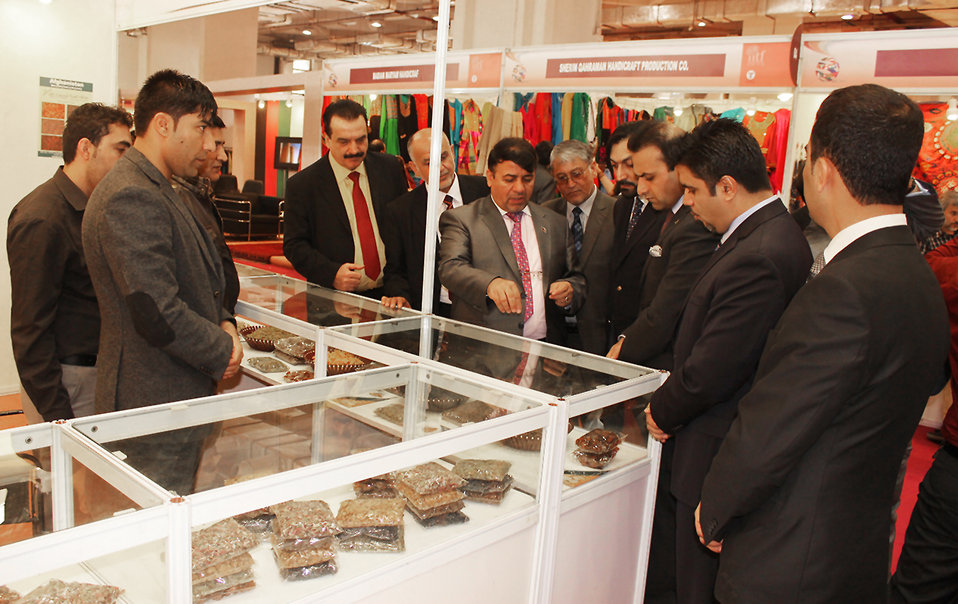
Afghan officials visit Afghan booth

Afghan private-sector and government officials visit a booth showcasing Afghanistan's dried fruit and nuts at the India International Trade Fair.